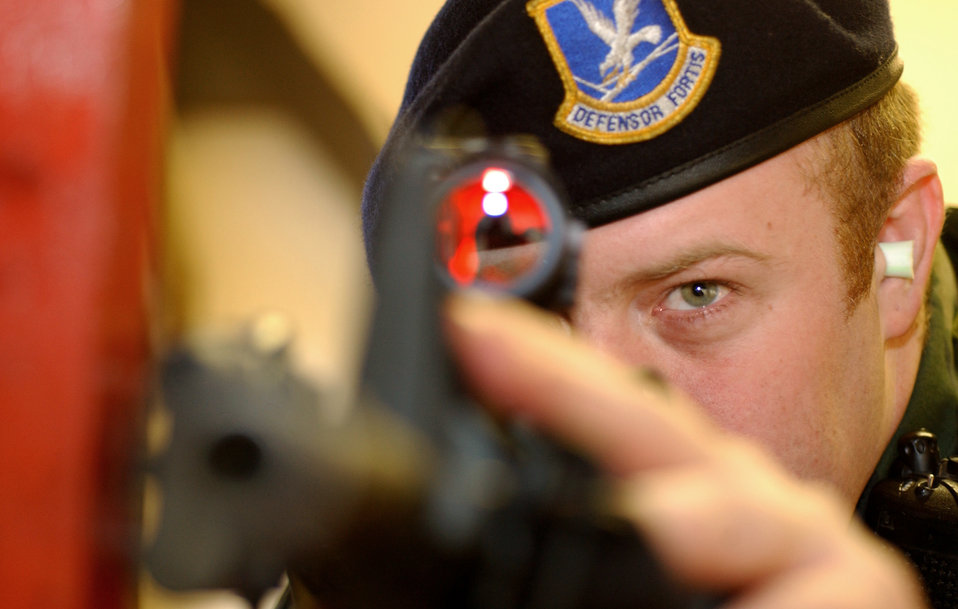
Taking aim

ROYAL AIR FORCE FELTWELL, England -- Airman 1st Class Robert Pepper aims an M-4 rifle towards a target here March 15. He is a security forces Airman with the 48th Security Forces Squadron at nearby Royal Air Force Lakenheath.